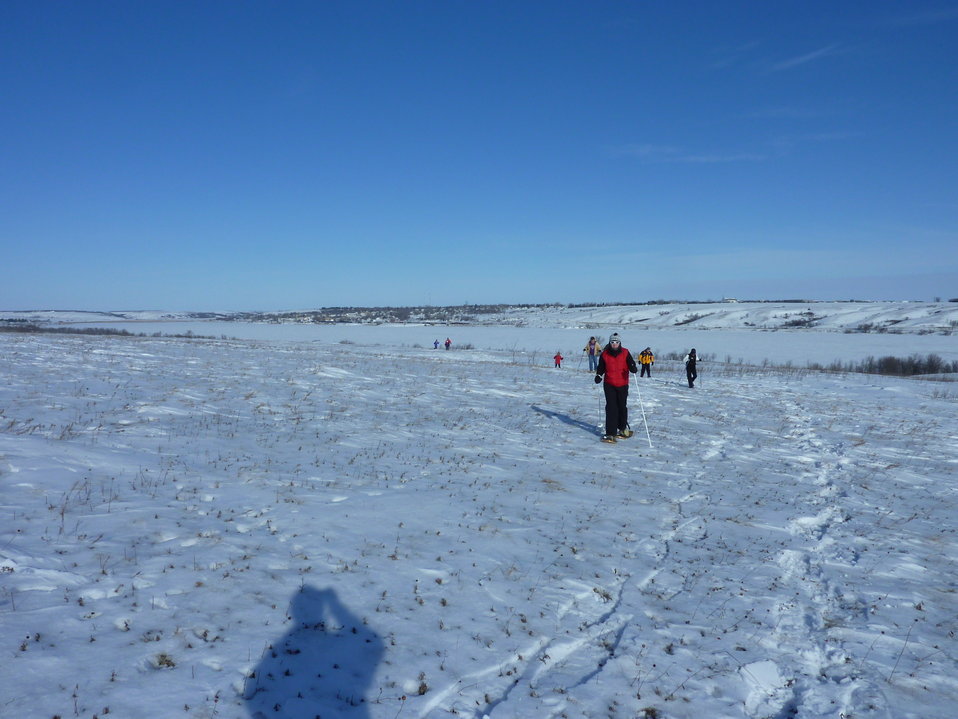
Let's Go Snowshoeing!

This group, led by instructor Doug Downs, snowshoed over 2.5 miles, taking in some breathtaking views on their journey at Des Lacs National Wildlife Refuge in North Dakota.